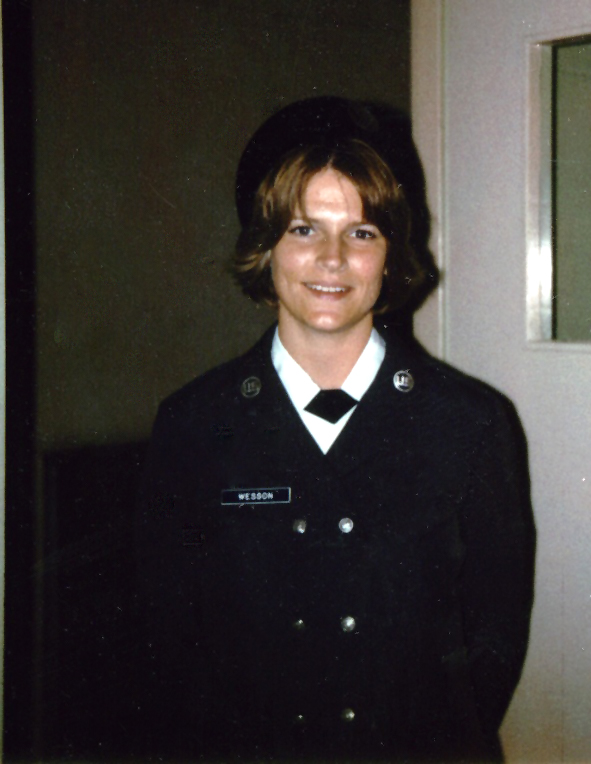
Sandy Cardenas was in the U.S. Air Force for eight years as a parachute rigger. Like the Kelsos, Sandy met her future spouse (Joe) while serving in the military. “I met my husband packing his parachutes when we were stationed on Homestead AFB, Fla. When Joe tells people his wife saved his life, he means it literally. Several months after we were married, Joe was on a night jump mission. His main parachute failed (jump master error, not rigger error) and the reserve he used had been packed by me,” said Sandy, an office automation assistant with the SFESO.